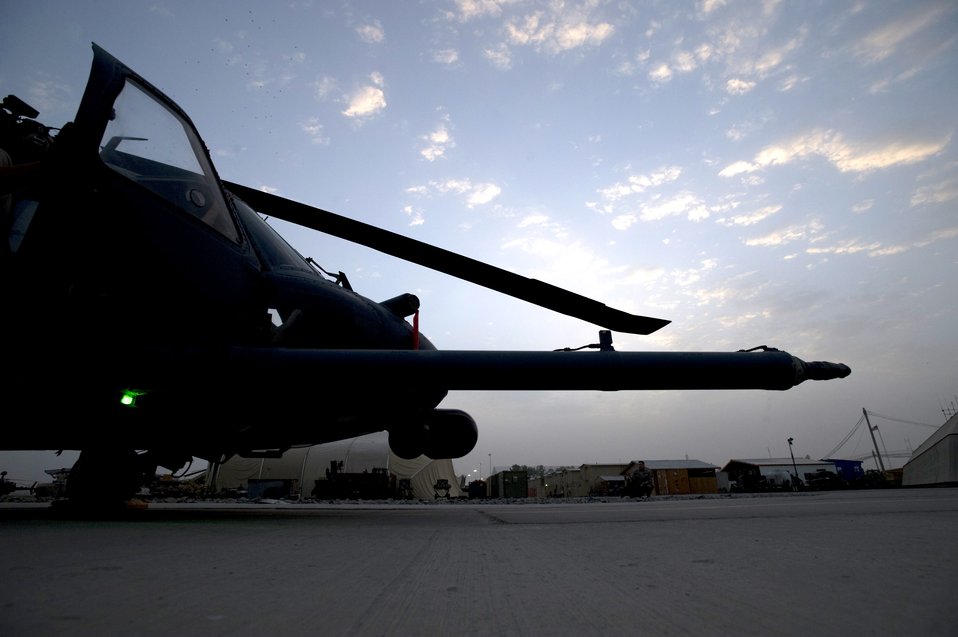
Airmen enhance Army medical evacuation mission

An HH-60 Pave Hawk combat search and rescue helicopter sits on the flightline as maintenance crews prepare it for a mission Aug. 10 at Kandahar Air Base, Afghanistan. The crews flying the HH-60s are supporting coalition and Afghan forces by landing in hostile areas to recover casualties and fly them to medical facilities for treatment.